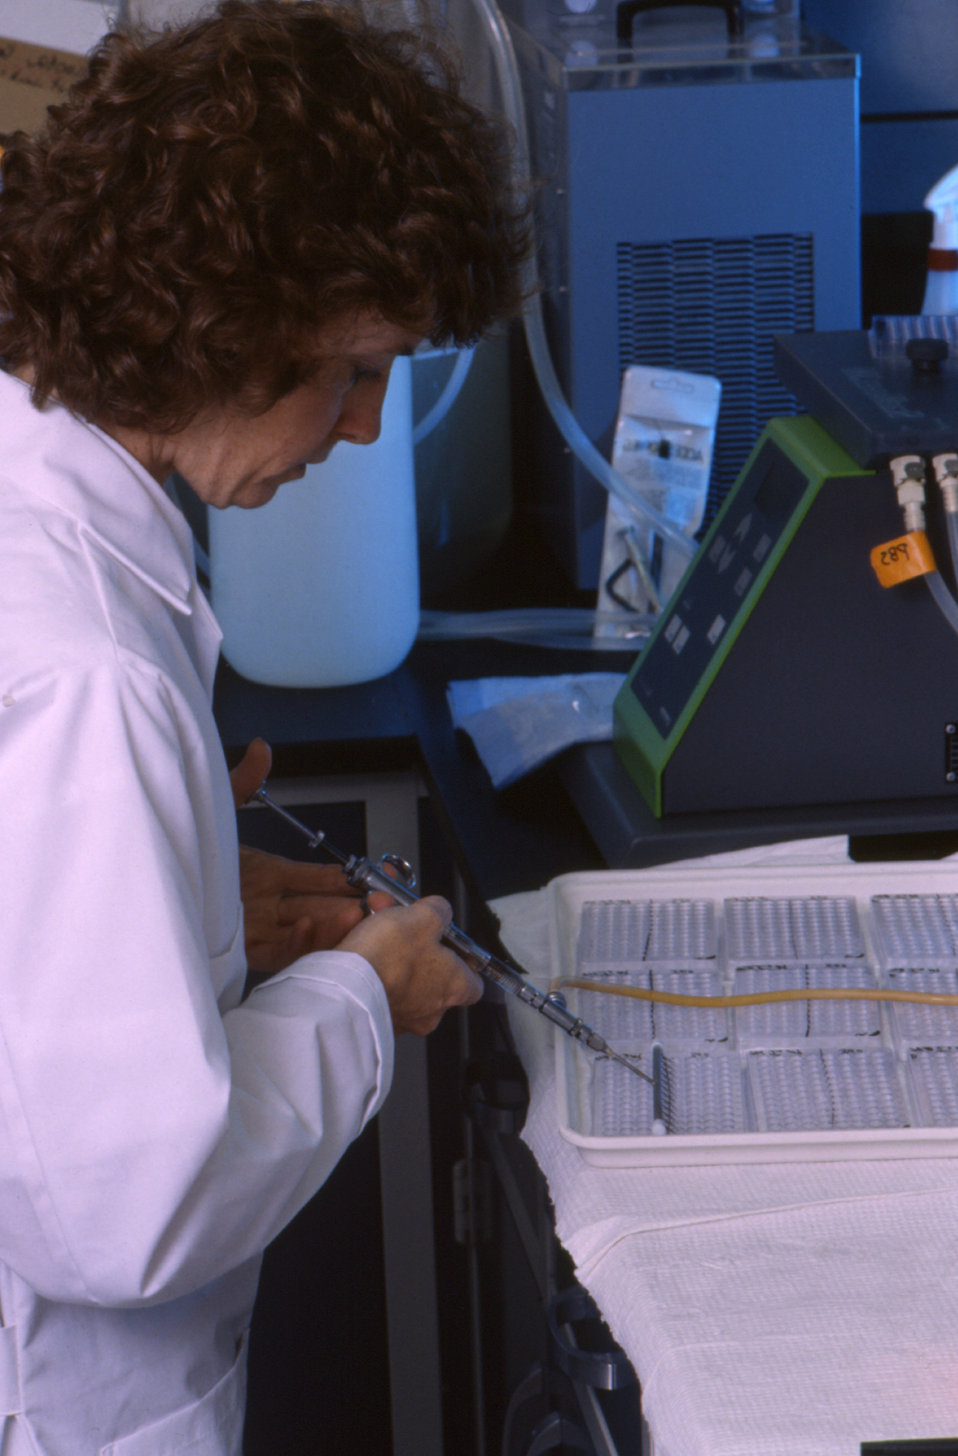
This early 1990's photograph shows a CDC laboratory technician dispensing lab samples with a multi-channel pipette.